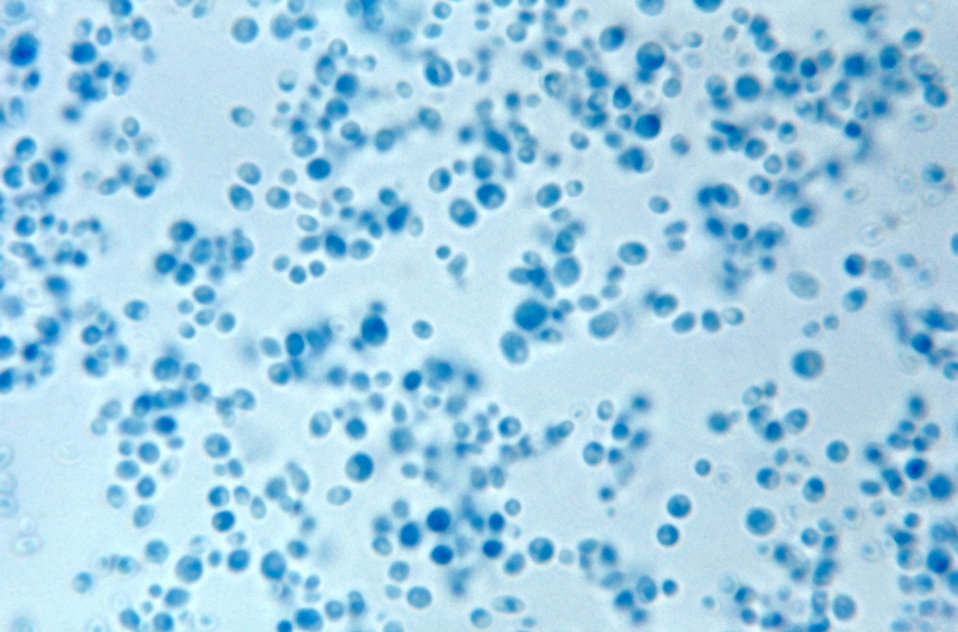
This photomicrograph depicts the yeast form of a Cryptococcus sp fungus.